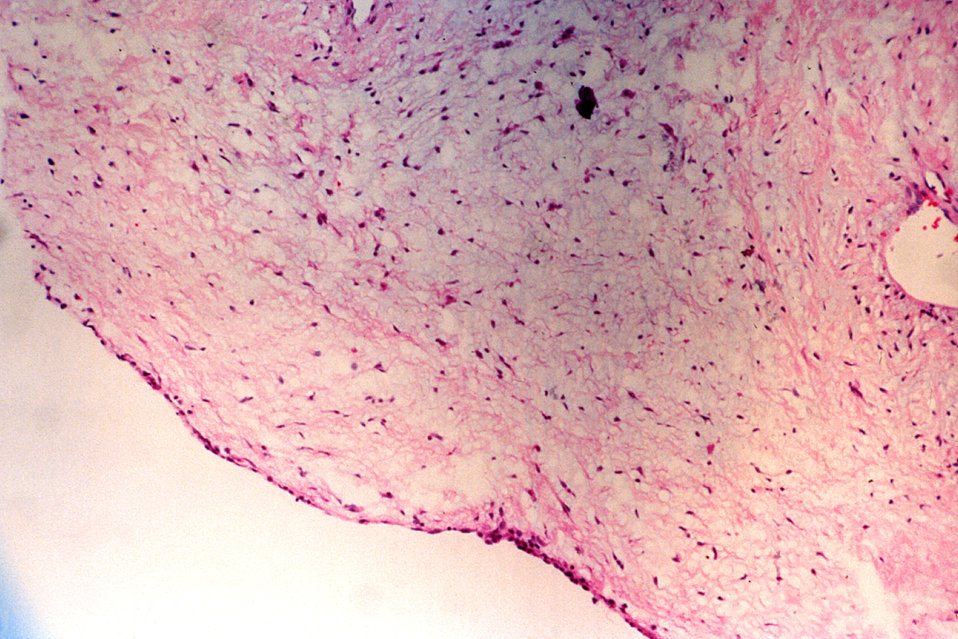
This micrograph depicts the histopathologic changes found in heart valve tissue found in a case of toxic shock syndrome (TSS).